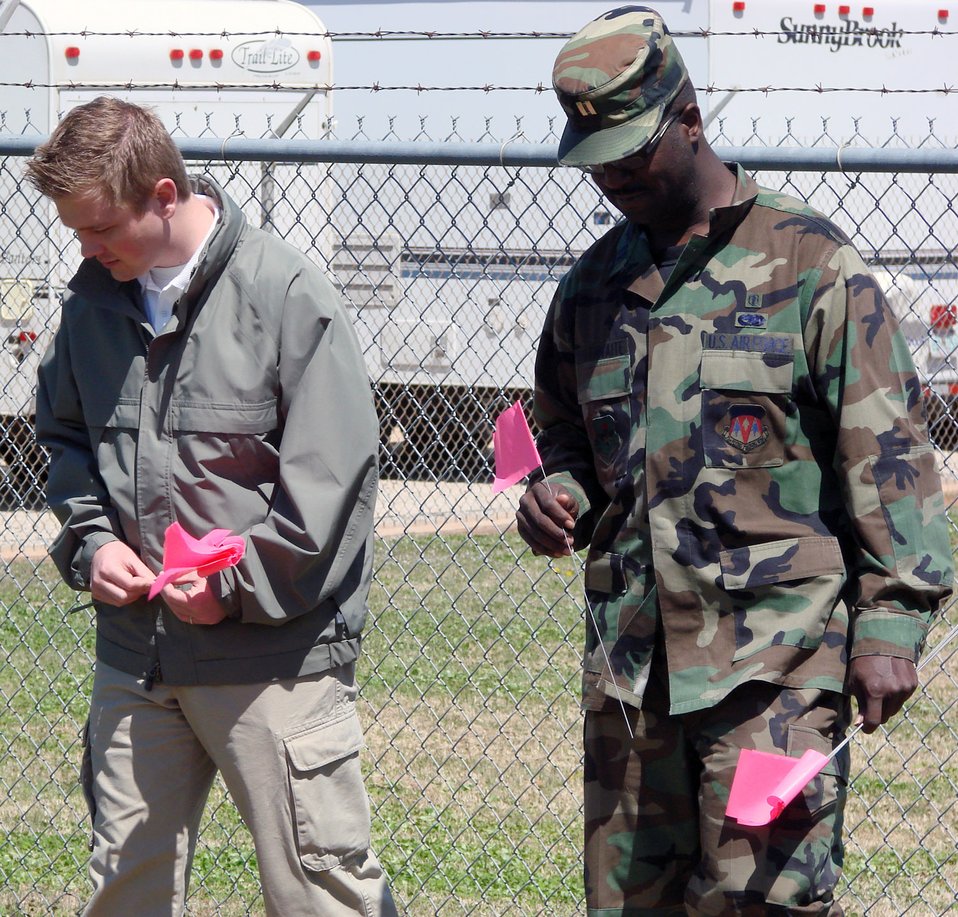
Did you say CSI or AFOSI?

Special Agent Skip Wheeler, Air Force Office of Special Investigations Detachment 438, and Capt. Timothy Brathwaite, 71st Medical Group bioenvironmental engineering, walk a grid and mark evidence during an exercise April 15 at Vance Air Force Base, Okla., on how to preserve and process a chemical or weapon-of-mass-destruction scene that may be a result of criminal activity.